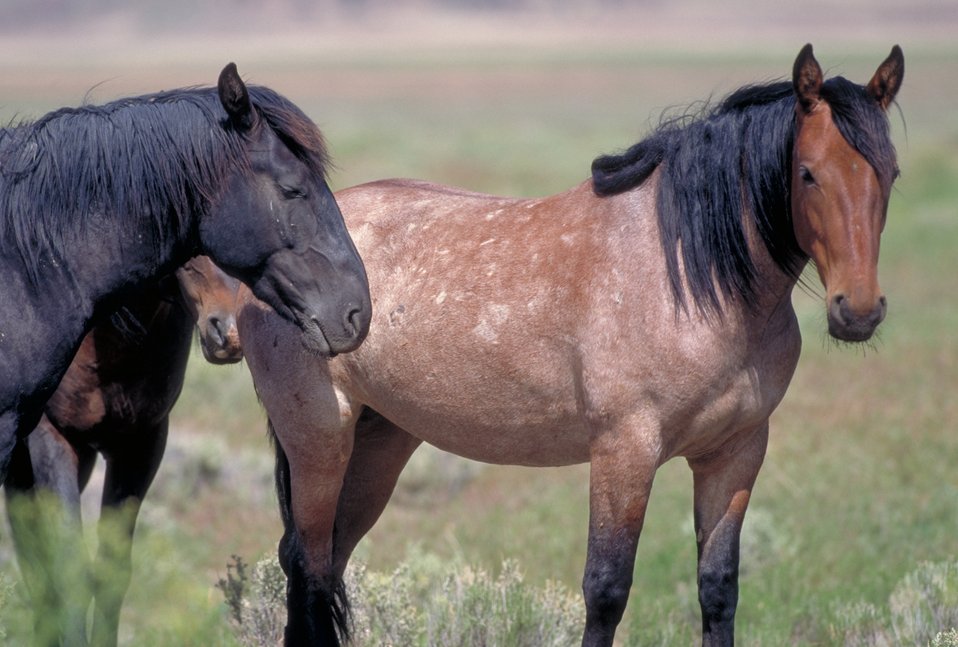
Onaqui Herd near Dugway, Utah.